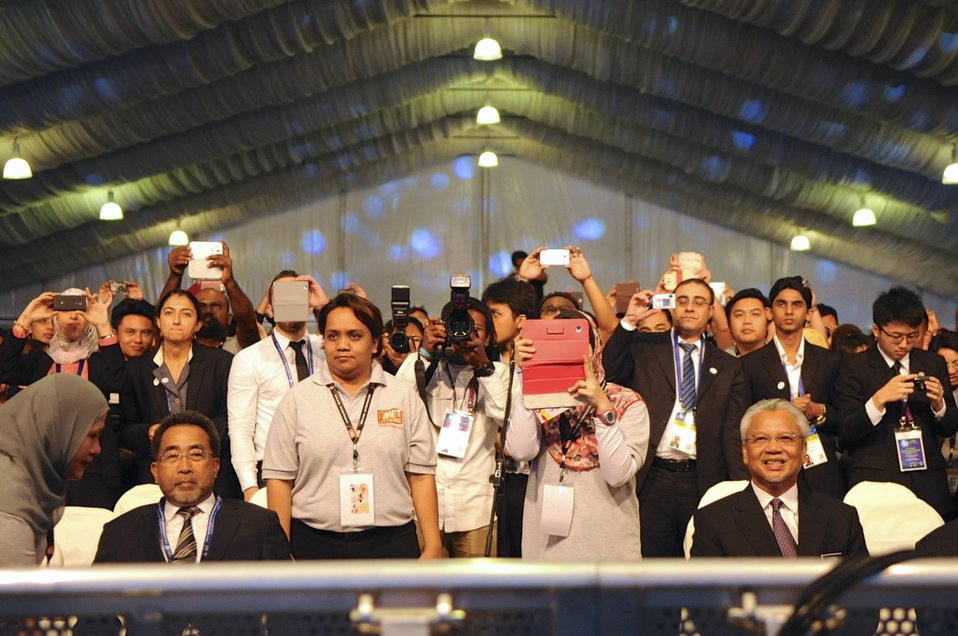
Attendees at 1MET Kick-Off Listen to Secretary Kerry

Over 4,700 young people listen to U.S. Secretary of State John Kerry and Malaysian Prime Minister Najib Razak address the 1MET Kick-Off, held as part of the Global Entrepreneurship Summit in Kuala Lumpur on October 11, 2013.